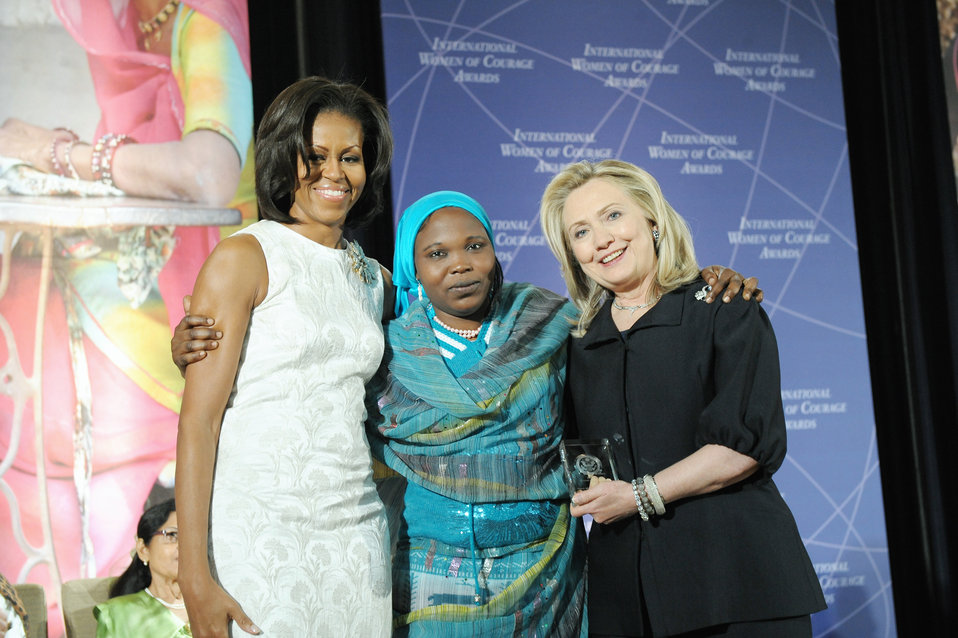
Secretary Clinton and First Lady Obama With 2012 IWOC Award Winner Hawa Abdallah Mohammed Salih of Sudan

U.S. Secretary of State Hillary Rodham Clinton, right; and First Lady Michelle Obama, left; pose for a photo with 2012 International Women of Courage (IWOC) Award Winner Hawa Abdallah Mohammed Salih of Sudan, at the U.S. Department of State in Washington, D.C., on March 8, 2012.